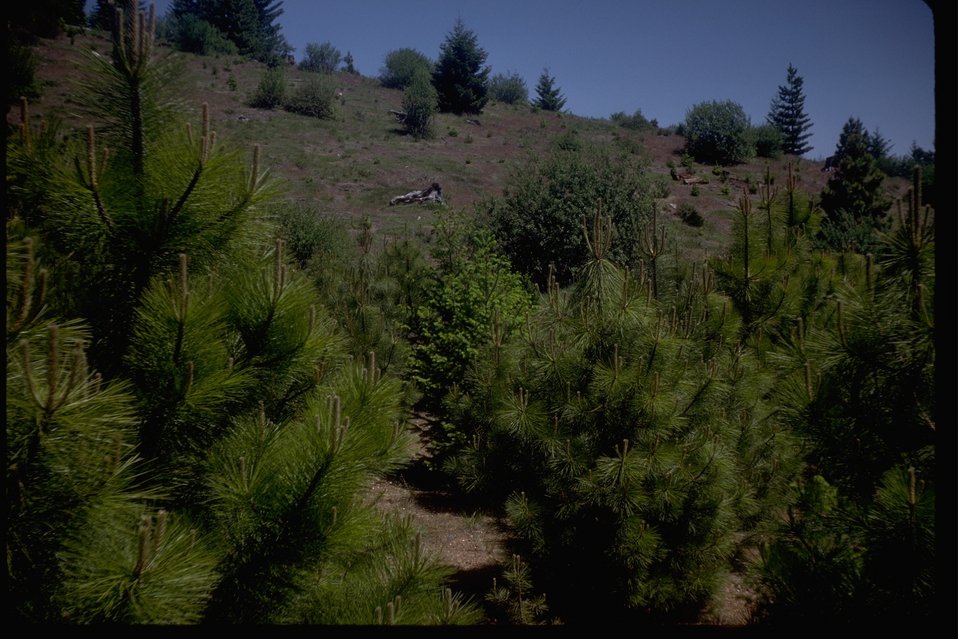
The China Gulch scarification project with its planted trees.